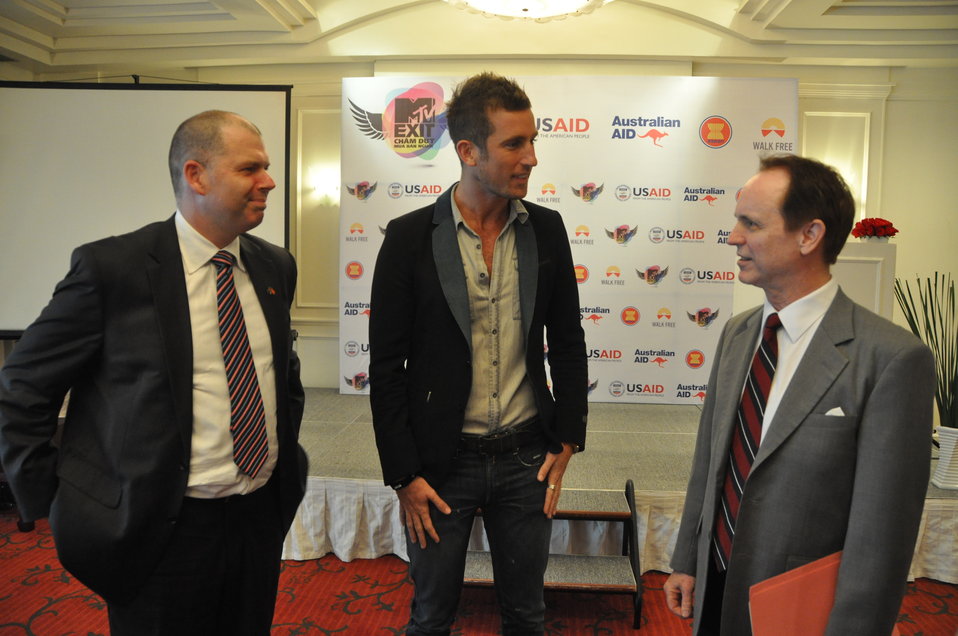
USAID joins MTVExit to launch documentary and awareness campaign against human trafficking